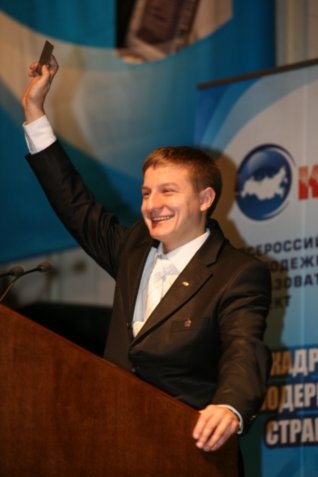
1 Congress Project personnel for the country's modernization, youth movement NASHI. Manager project, commissioner of Mr. Ilya Kostunov Русский: Илья Костунов, Федеральный руководитель проекта КМС, на 1 съезде КМС, комиссар движения НАШИ